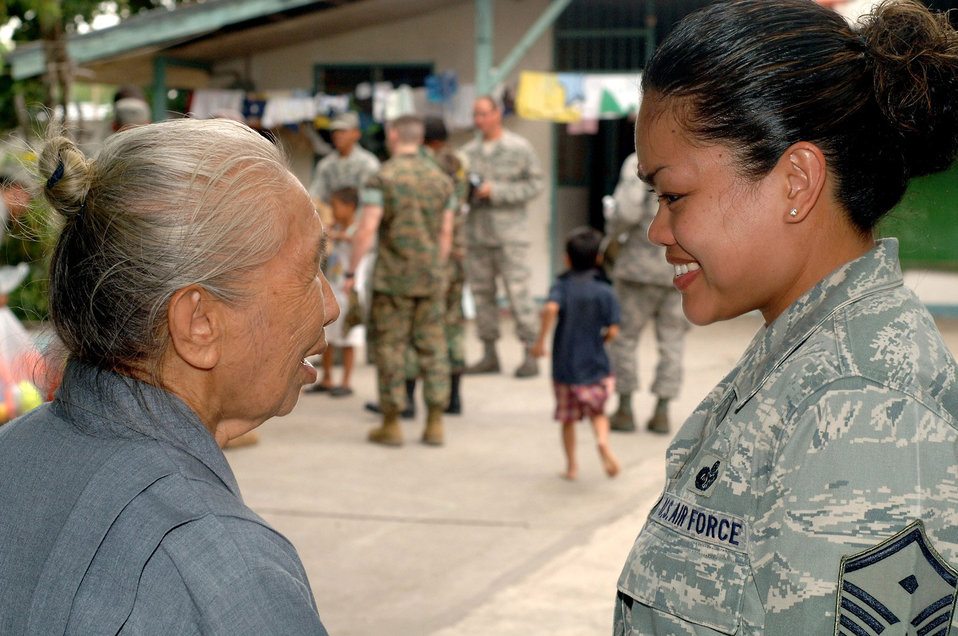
Airmen spread goodwill during Balikatan 2009

Sister Mary Alessandrina Casas of the Sisters of Mary of the Encharist (left) greets Master Sgt. Rosene Goods and other Airmen during their visit to Duyan Ni Maria orphanage April 25 at Angeles City, Philippines. Airmen donated school supplies and athletic equipment as part of a volunteer community relations. Sergeant Goods is the first sergeant for all Air Force personnel participating in Exercise Balikatan 2009.